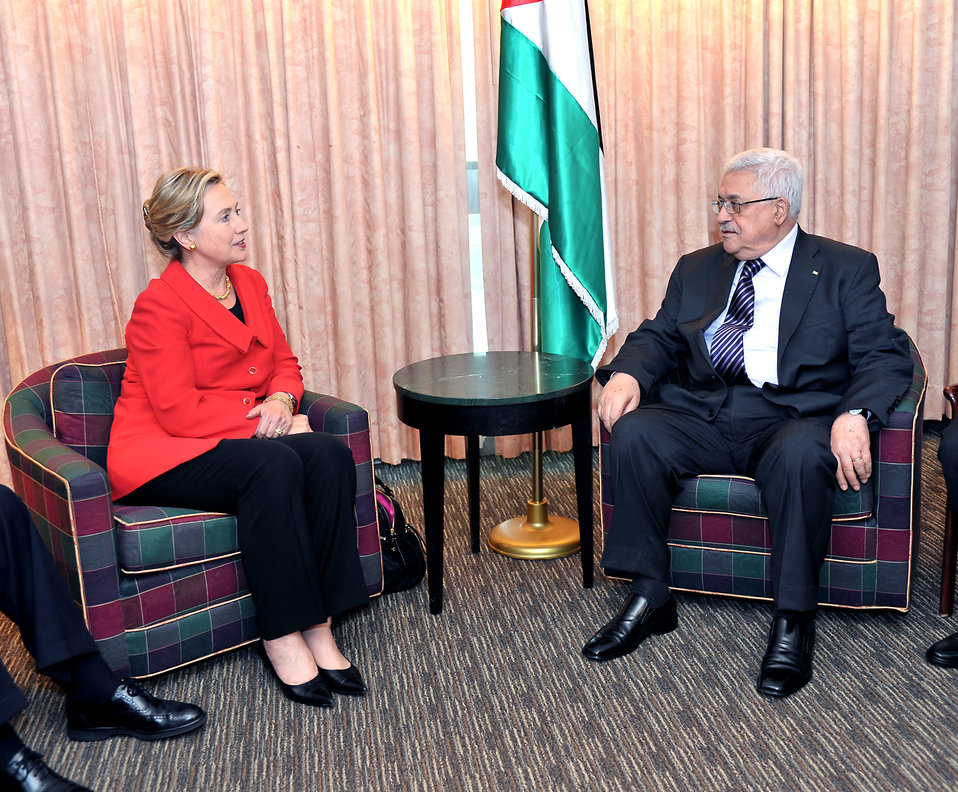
Secretary Clinton Holds a Bilateral With Palestinian President Abbas

U.S. Secretary of State Hillary Rodham Clinton holds a bilateral meeting with Palestinian President Mahmoud Abbas at the Waldorf-Astoria Hotel in New York, New York, on September 24, 2010.